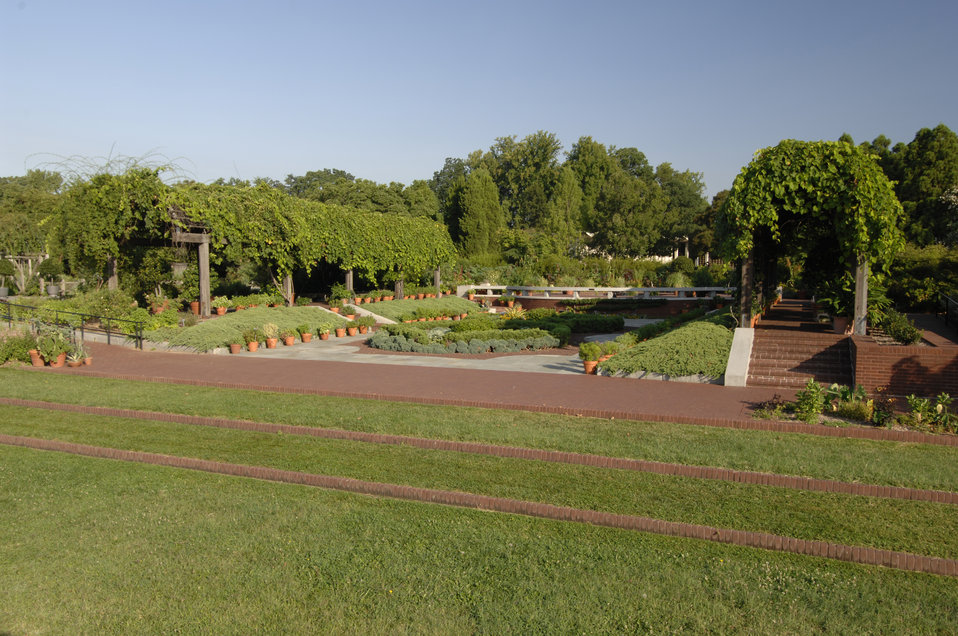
The National Herb Garden is a joint partnership of the National Arboretum and the Herb Society of America. The garden was constructed and dedicated in 1980 and is the largest designed herb garden in the nation and includes annual, perennial, and woody herbal plants. Herbs serve important roles in cultures throughout the world flavoring our food, healing our bodies, and invigorating our senses. This photograph shows the National Herb Garden at the National Arboretum in Washington, D.C. on August 19, 2008.